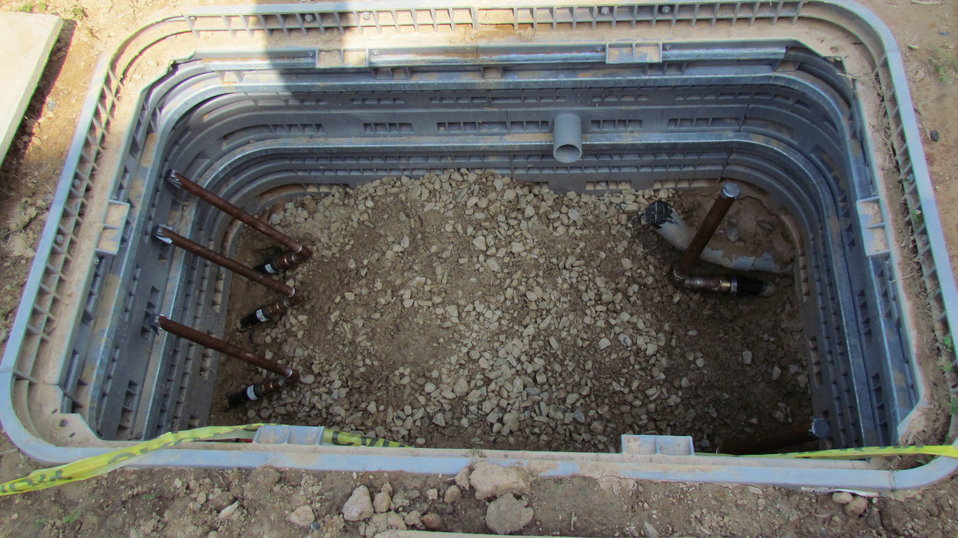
An underground fluid distribution box that permits researchers to pick various earth-coupled configurations.